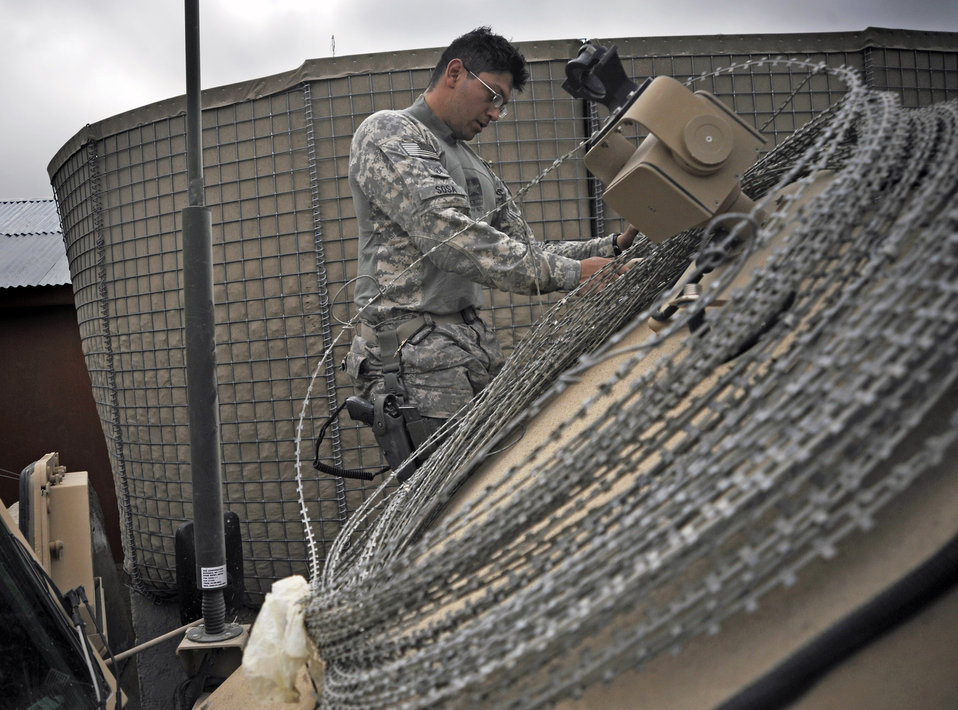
Vehicle maintainers travel rough road

Staff Sgt. Nester Sosa inspects a medium tactical vehicle after combat operations April 20 Forward Operating Base Herrara, Afghanistan. Sergeant Sosa is a vehicle maintainer assigned to the Paktya Provincial Reconstruction Team from Forward Operating Base Gardez, Afghanistan. He is deployed from the 97th Logistics Readiness Squadron from Altus Air Base, Okla.